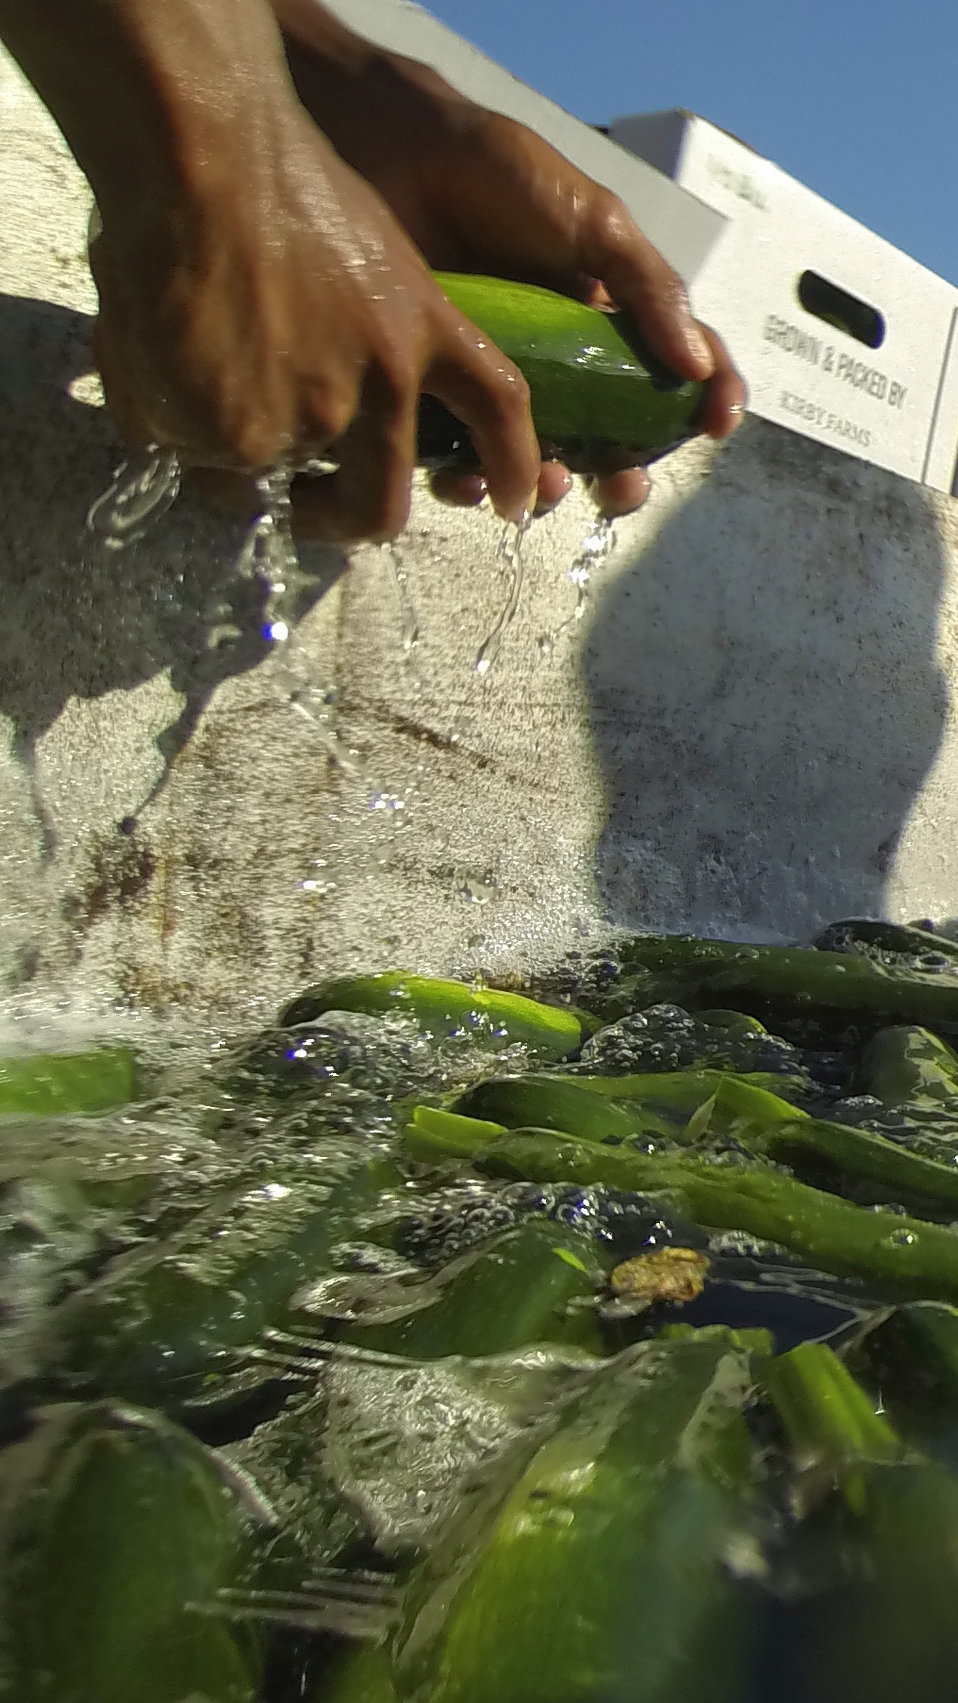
Migrant workers rinse and pack just-picked yellow squash on a processing trailer, at Kirby Farms in Mechanicsville, VA on Friday, Sept. 20, 2013. Kirby Farms devotes 200 acres of the farm to eggplant, spinach, beets, tomato, jalapeno peppers, melons and a variety of greens. Soybeans and small grain are grown on the remaining 300 acres. The fertile Virginia soil and their management practices, allows Kirby Farms to double and triple crop fields with rotational crop selection. Wholesalers, who buy from this farm, sell the produce to major supermarkets in the Mid-Atlantic region, from North Carolina to Maryland. Restaurants in the local area prepare and serve their harvest to patrons in the Greater Richmond, VA Region.